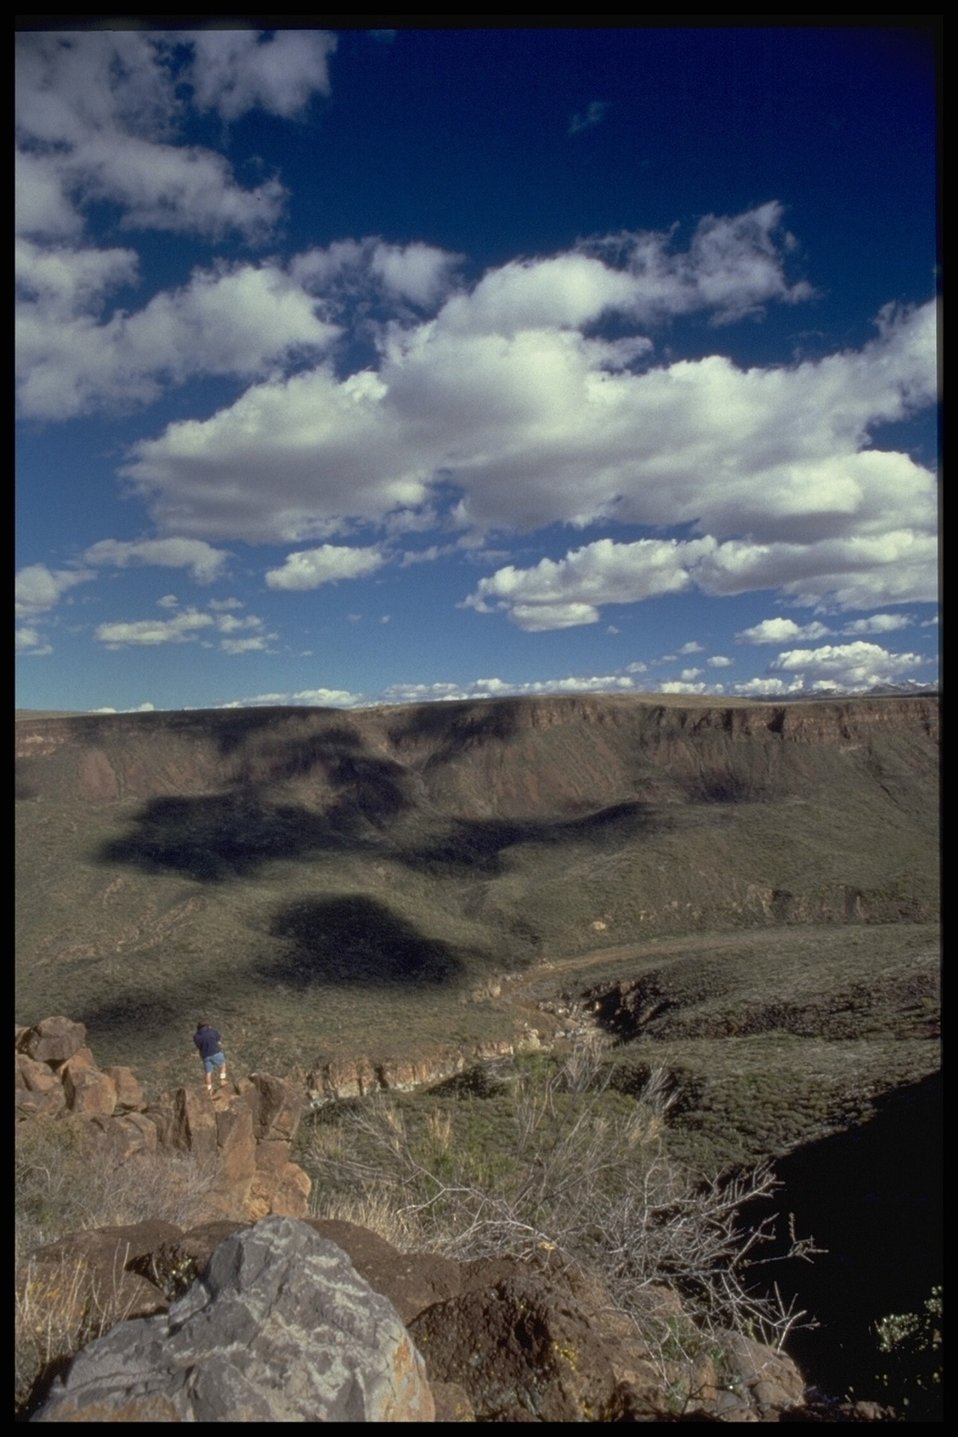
White clouds hang in the Arizona sky over the Agua Fria National Monument.